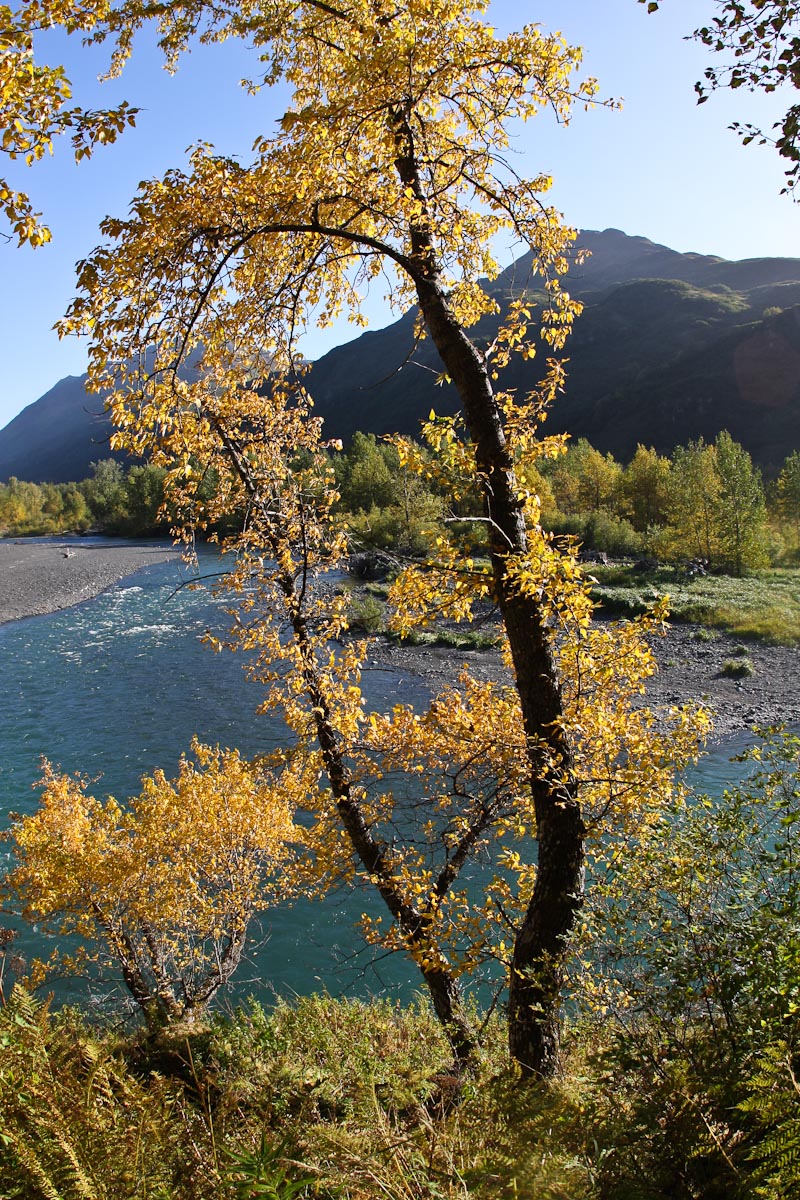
Cottonwood splendor

Lisa Hupp/USFWS
Source: Kodiak NWR
Uganik River